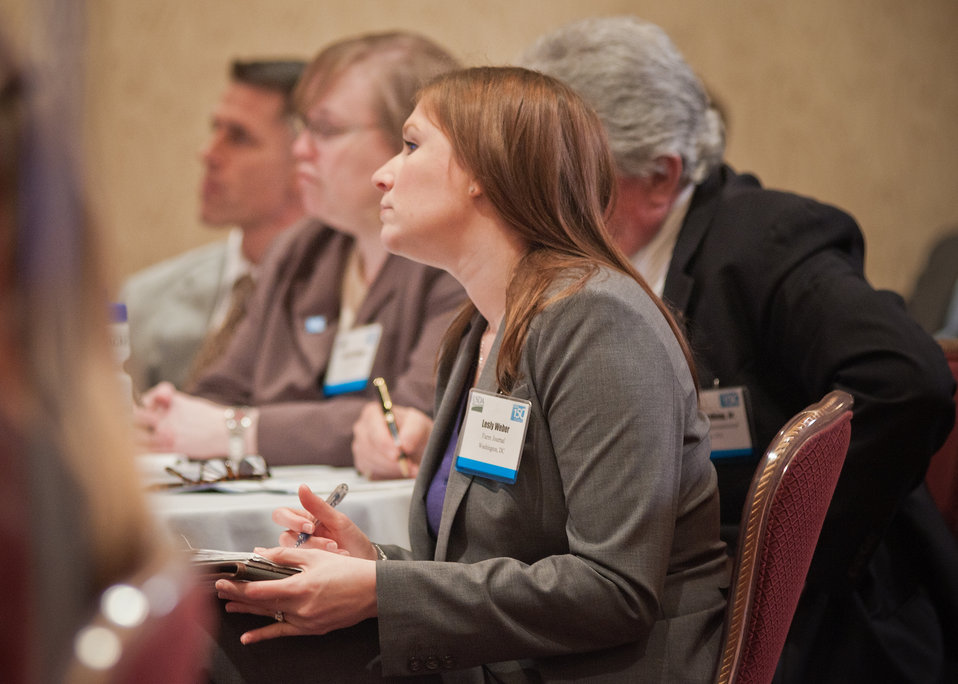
Lesly Weber, Farm Journal, Washington, D.C., listens to speakers at the Global Food Security afternoon breakout session at the 2012 Agricultural Outlook Forum, “Moving Agriculture Forward, Growing, Innovating and Celebrating 150 Years” held at the Crystal gateway Marriott Hotel Arlington, Virginia, Friday, February 24, 2012. The session discussed and reviewed challenges associated with feeding a growing world population with a currently strained resource base.